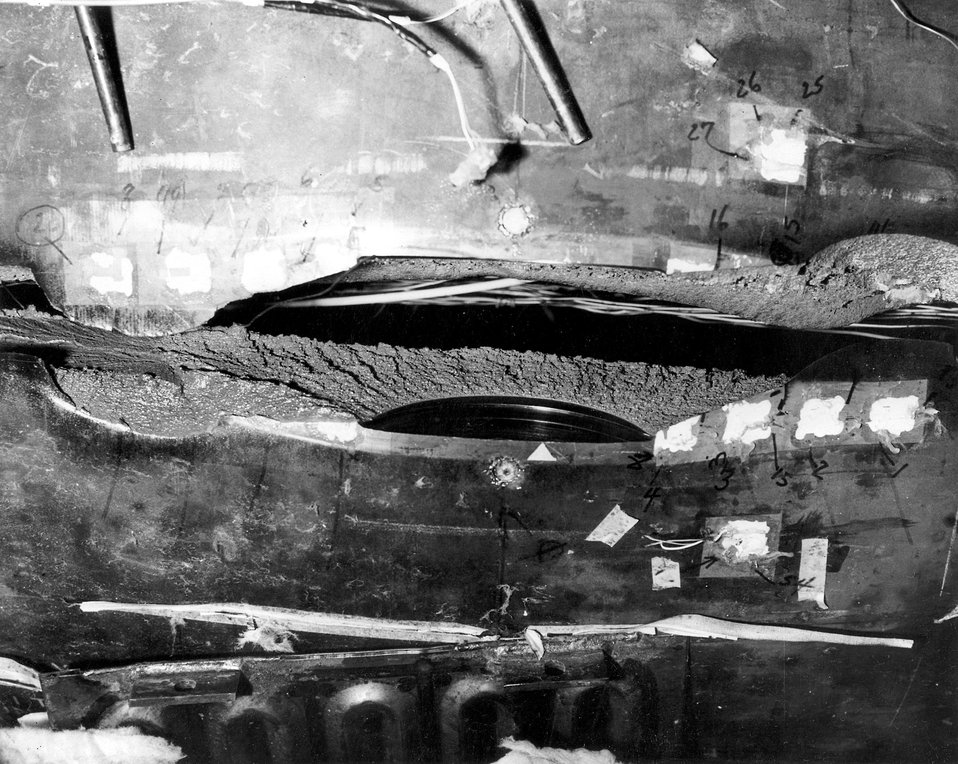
Photograph (three of three) of a water-cooled reactor vessel model that was deliberately flawed and then put under pressure to the point of failure to obtain data. c. 1973